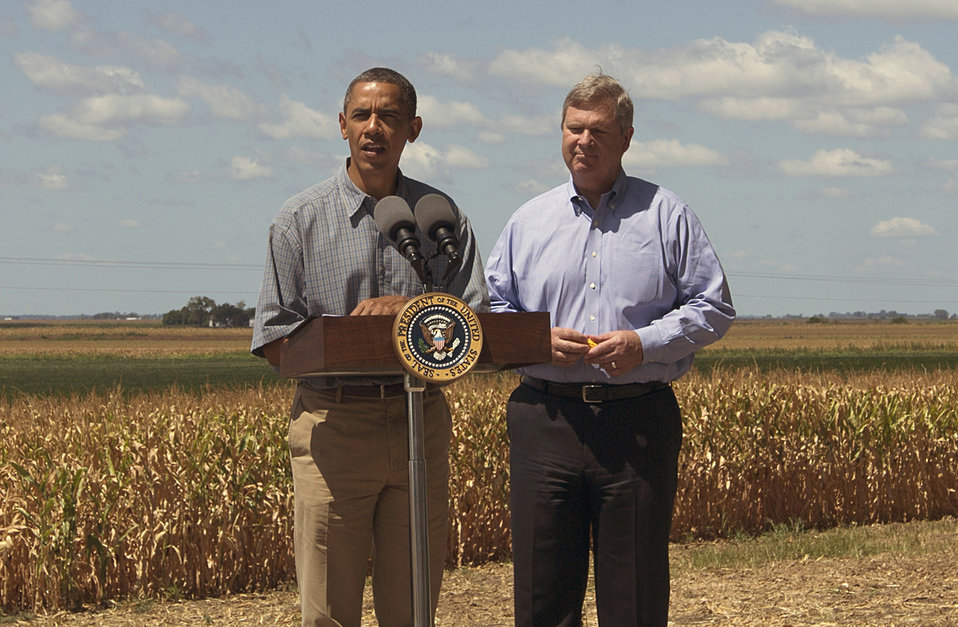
President Barack Obama and Agriculture Secretary Tom Vilsack visited the McIntosh family farm in Missouri Valley, Iowa, on Monday, August 13, 2012 to view the drought stricken crops. The federal government has already taken some steps to ease farmers whose crops are growing poorly this summer, and the administration plans to spend close to $200 million on livestock, officials announced earlier in the day. The Department of Defense is encouraging vendors to buy meat to ease the crisis.